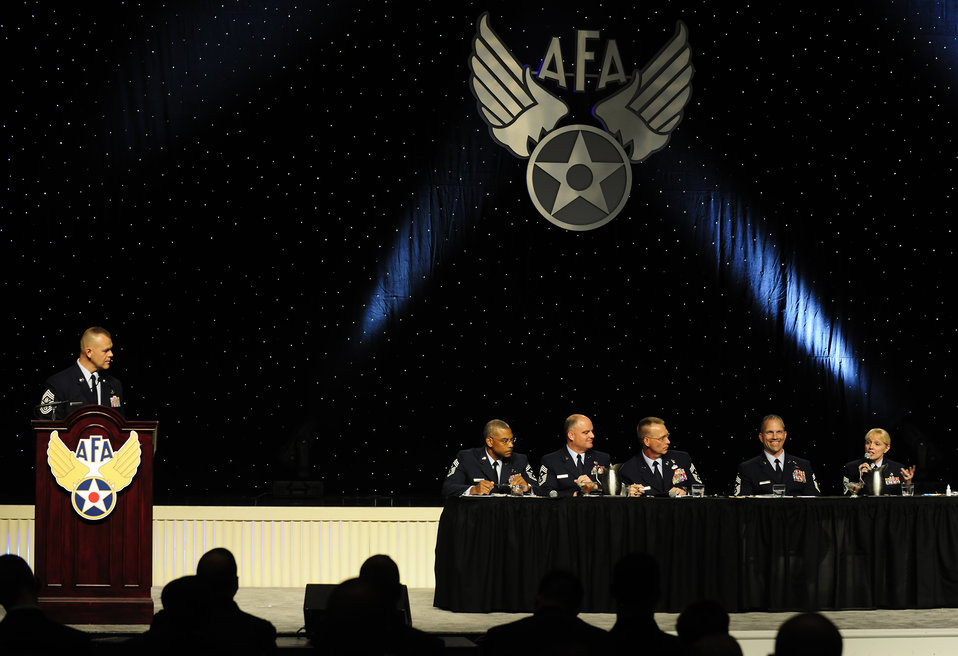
Command Chiefs Forum

Chief Master Sgt. of the Air Force James Roy moderates a command chiefs' forum Sept. 13, 2010, during the Air Force Association's Air and Space Conference and Technology Exposition at National Harbor in Oxon Hill, Md. Five command chiefs answered questions including topics on fitness, resiliency among Airmen and their families, social media and suicides.